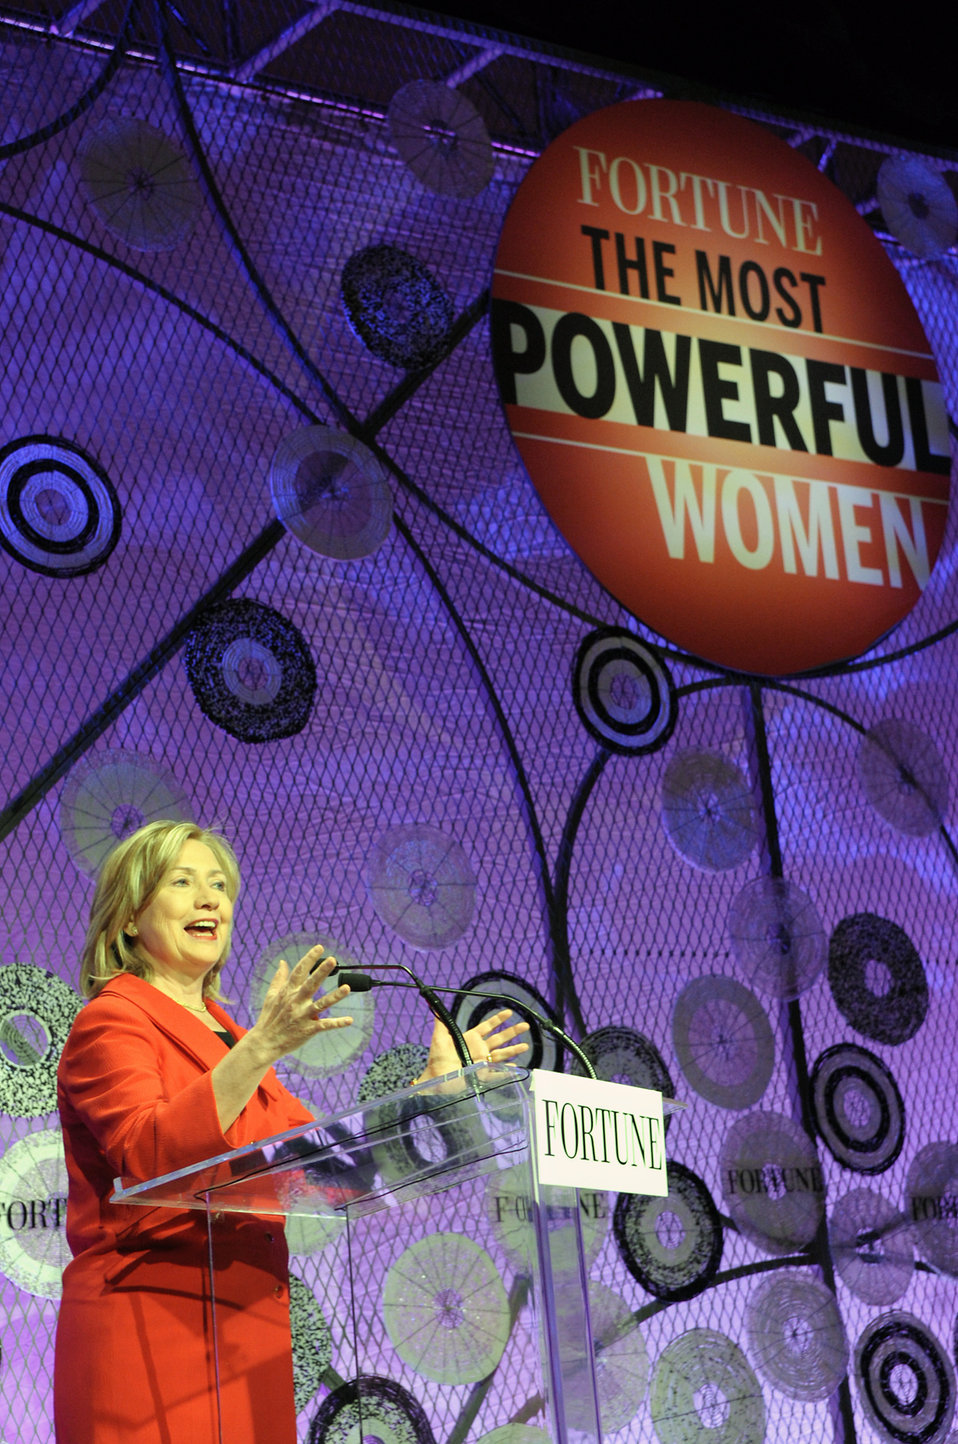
Secretary Clinton Delivers Remarks at the 12th Annual Fortune Most Powerful Women Summit

U.S. Secretary of State Hillary Rodham Clinton delivers remarks at the 12th Annual Fortune Most Powerful Women Summit at the Mandarin Oriental Hotel in Washington, D.C., October 6, 2010.